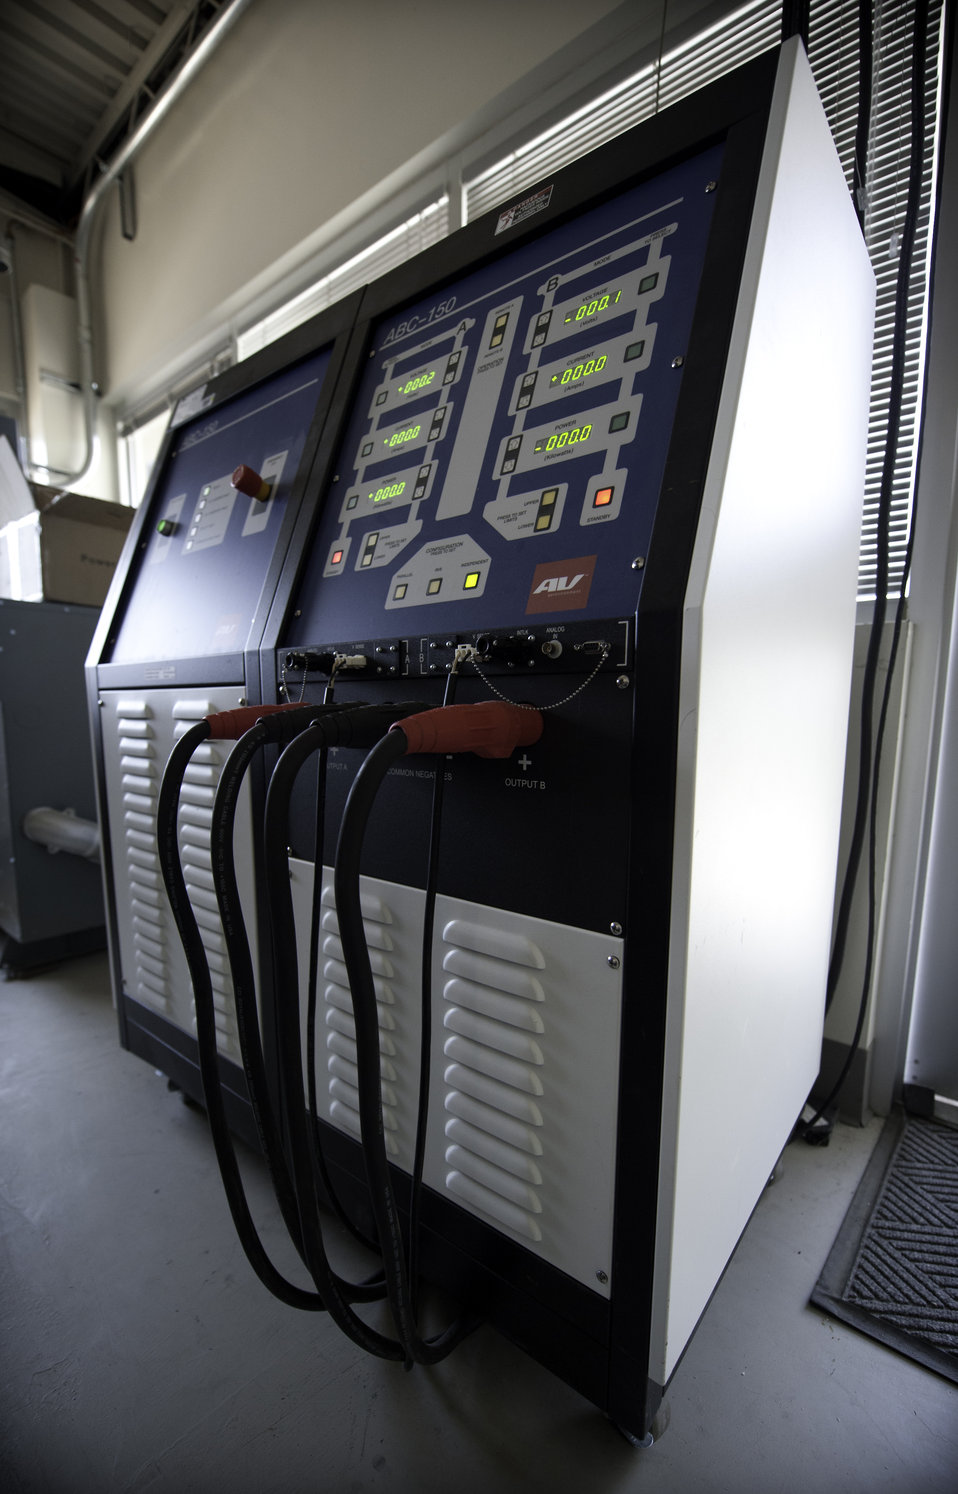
Dual channel cycling station at the Thermal Test Facility at the National Renewable Energy Laboratory used to accelerate the research of battery performance.